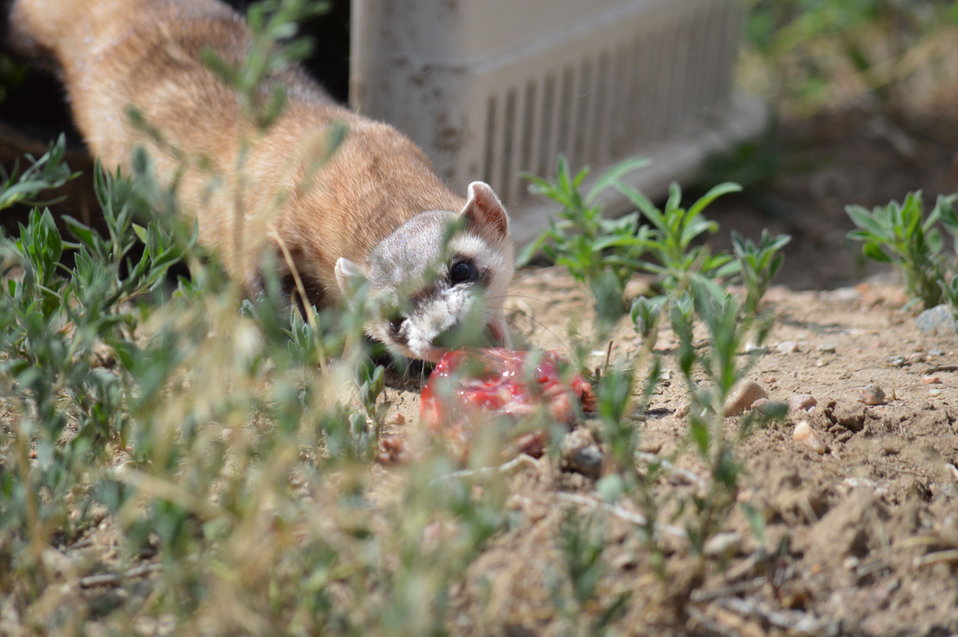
Interns visit the NBFFCC

In the summer of 2012, USFWS Region 6 interns visited the National Black-footed Ferret Conservation Center (NBFFCC) in Colorado to learn how the program reintroduces the endangered Black-footed ferret back into its native habitat.